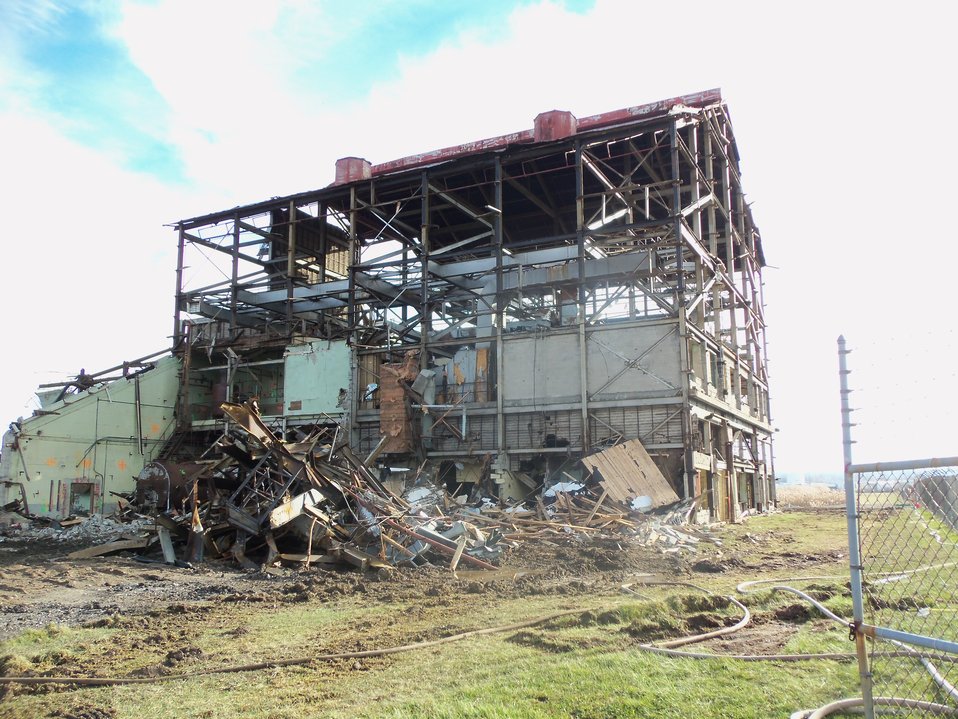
BLDG 401 CLOSER SHELL PICTURE.

Activities from the Niagara Falls Storage Site, which is associated with the former Lake Ontario Ordnance Works. Formerly Utilized Sites Remedial Action Program (FUSRAP), a program initiated in 1974 to identify, investigate and clean up or control sites that were part of the Nation's early atomic energy and weapons program. Activities at the sites that are eligible for FUSRAP were conducted by Manhattan Engineer District (MED) or the Atomic Energy Commission (AEC), both predecessors of the Department of Energy (DOE). The U.S. Army Corps of Engineers was assigned management of FUSRAP by Congress in 1997.